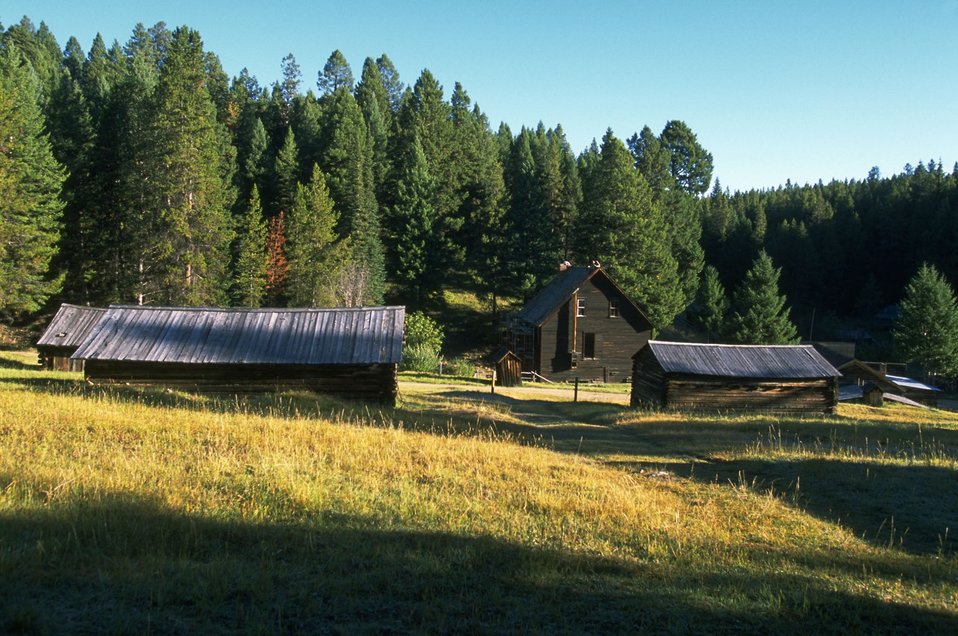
Garnet Ghost Town-Welles Hotel in background